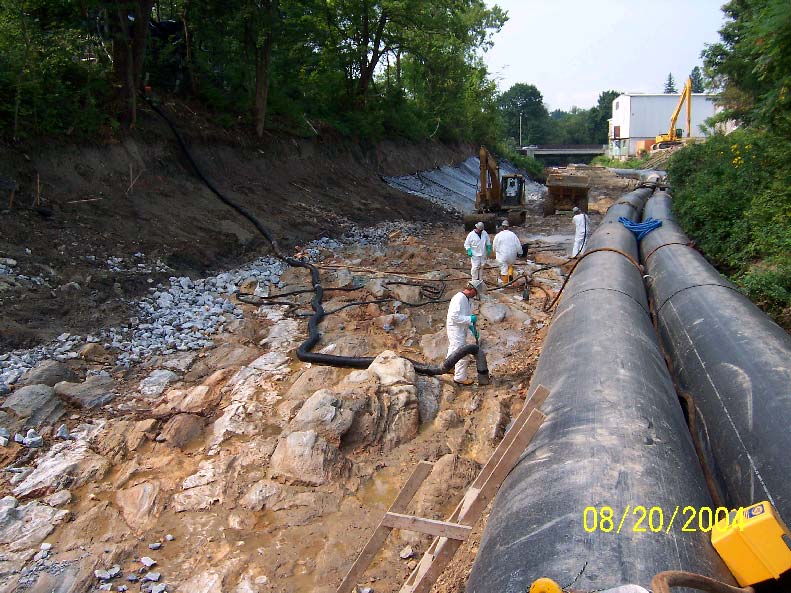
(Earlier photo) August 2004, Early Housatonic cleanup '1.5 Mile Reach', Pittsfield, MA

On the right side of this photo, you can see how the Housatonic River was diverted through the large pipes. This allowed for crews to work 'in the dry' with better access to the bottom of the river. Here you can see them high pressure washing and vacuuming the bedrock.